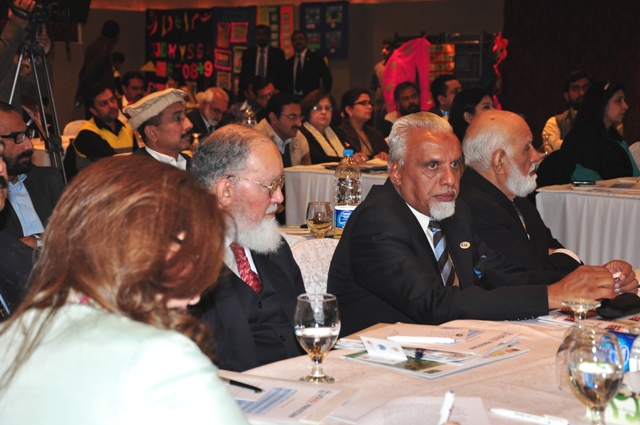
Education Workshop 143